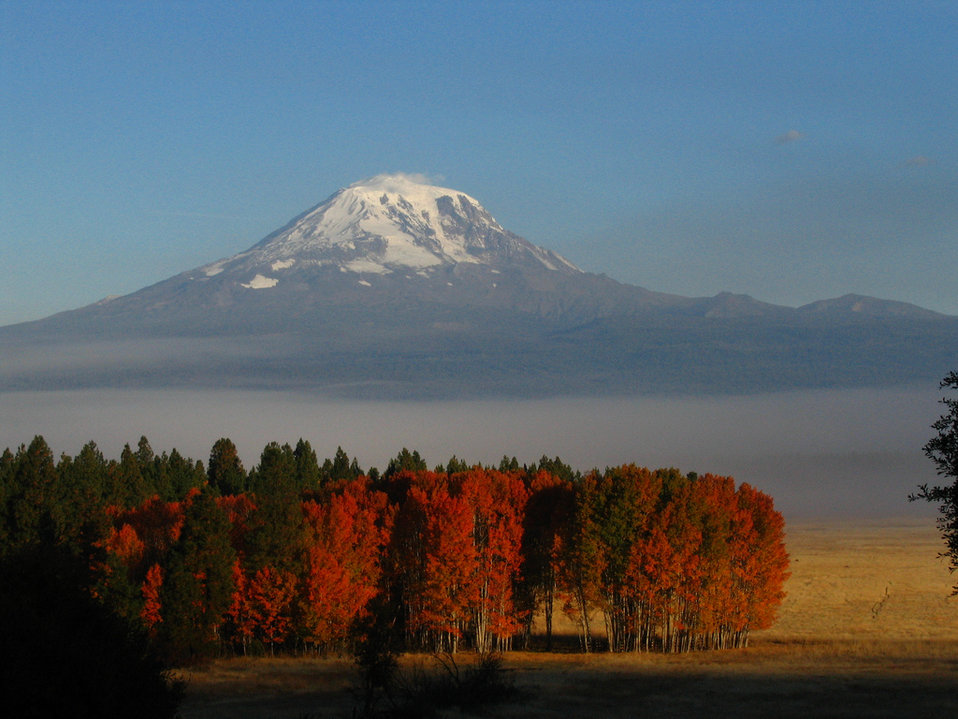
aspen grove

Conboy Lake National Wildlife Refuge, WA